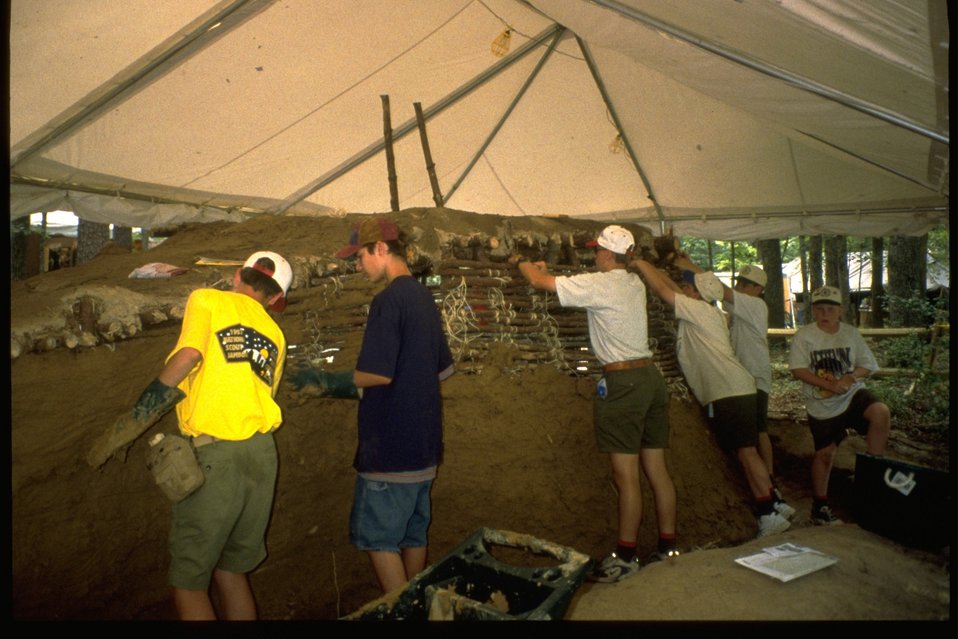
Boy Scouts National Jamboree: BLM archeology exhibit. (Pit House)